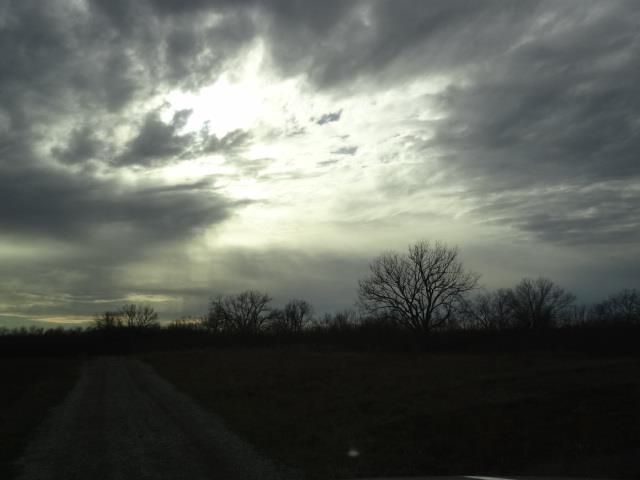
stormy skies

Marais des Cygnes National Wildlife Refuge, KS
January 2012